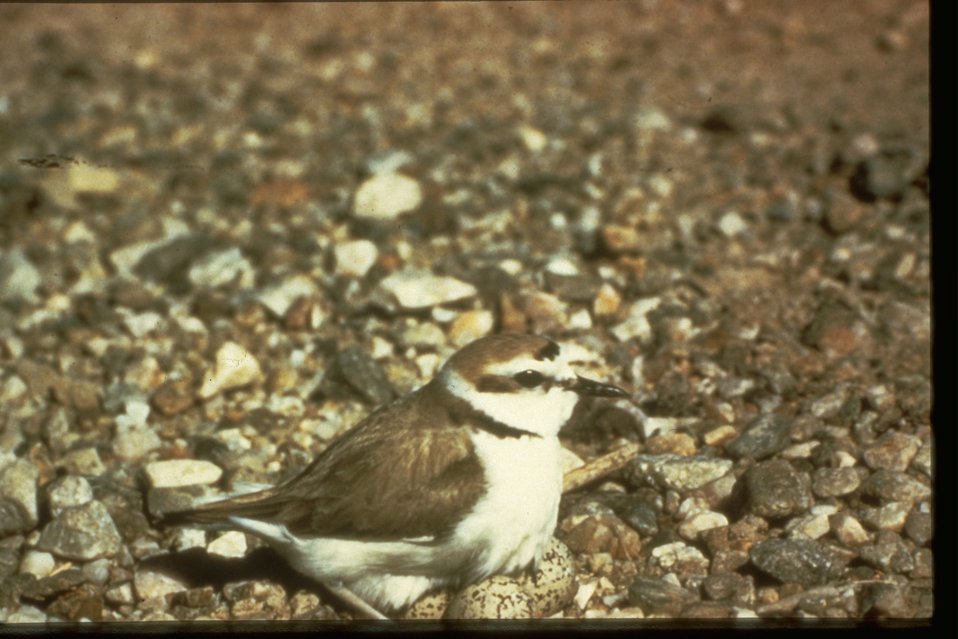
A Snowy Plover (Charadrius alexandrinus vivosus) sitting on pebbles.